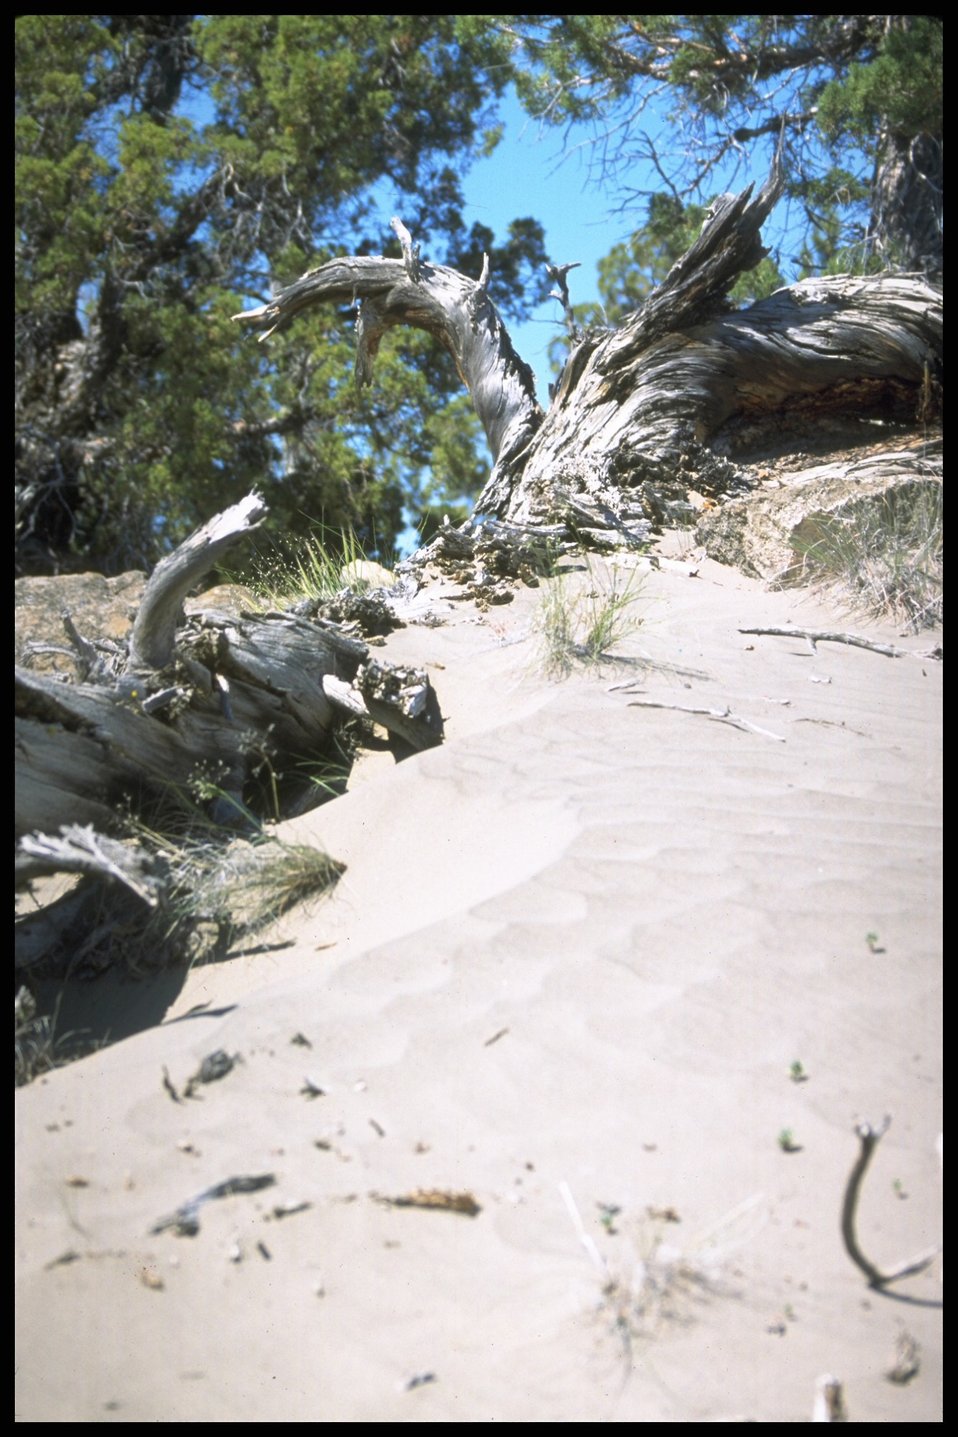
Lost Forest, Lakeview District.